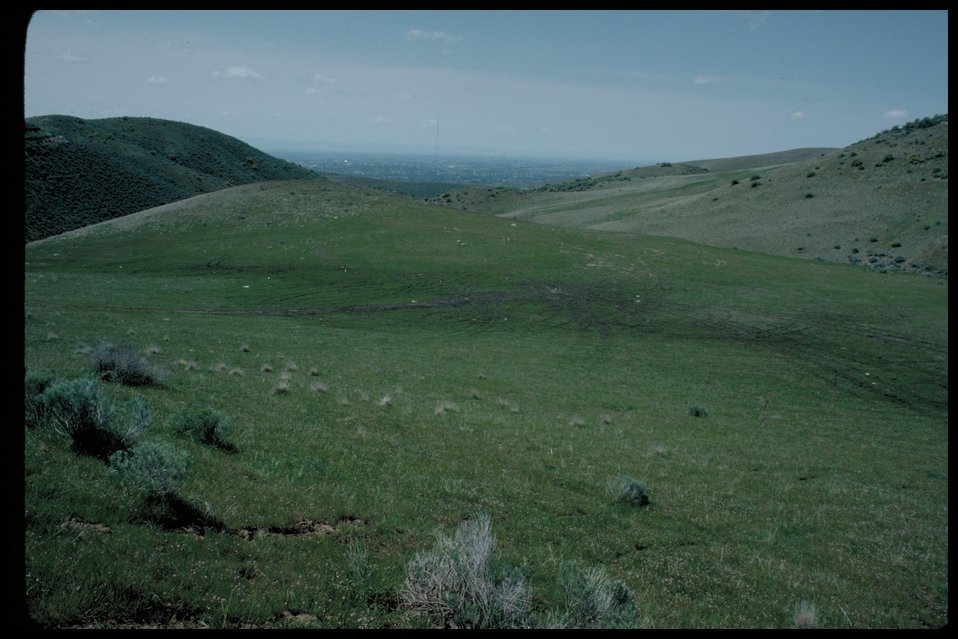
Boise Front OHV Off Highway Vehicles Four Rivers Field Office LSRD Lower Snake River District